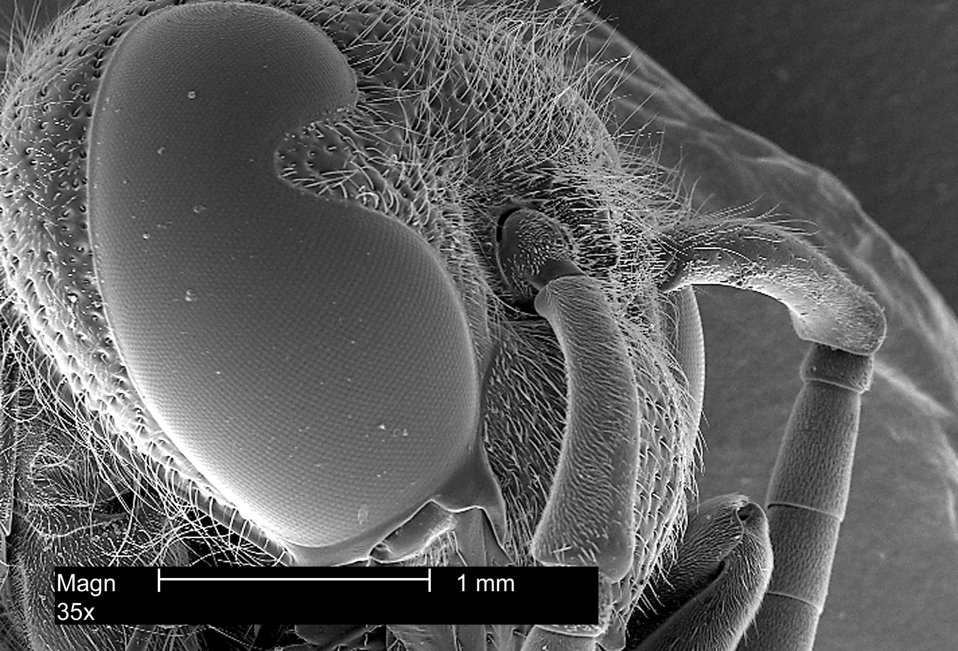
An electron micrograph of a wasp's head region and the insect's compound eye, magnified 35x.